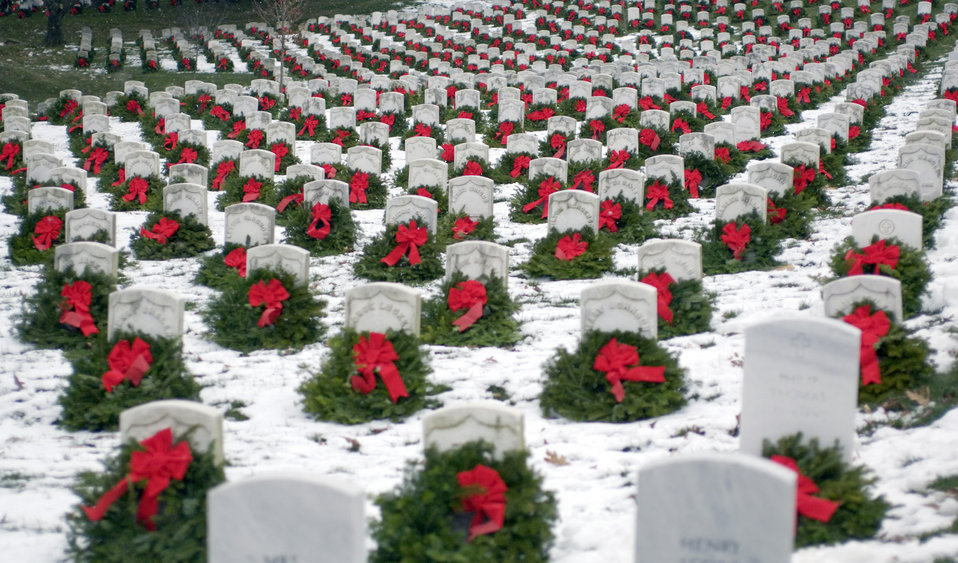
Honoring heroes

ARLINGTON, Va.-- Christmas wreaths adorn head stones at Arlington National Cemetery. The 14th annual wreath-laying event is the result of Worcester Wreath Company's owner Morrill Worcester's childhood dream of doing something to honor those laid to rest.